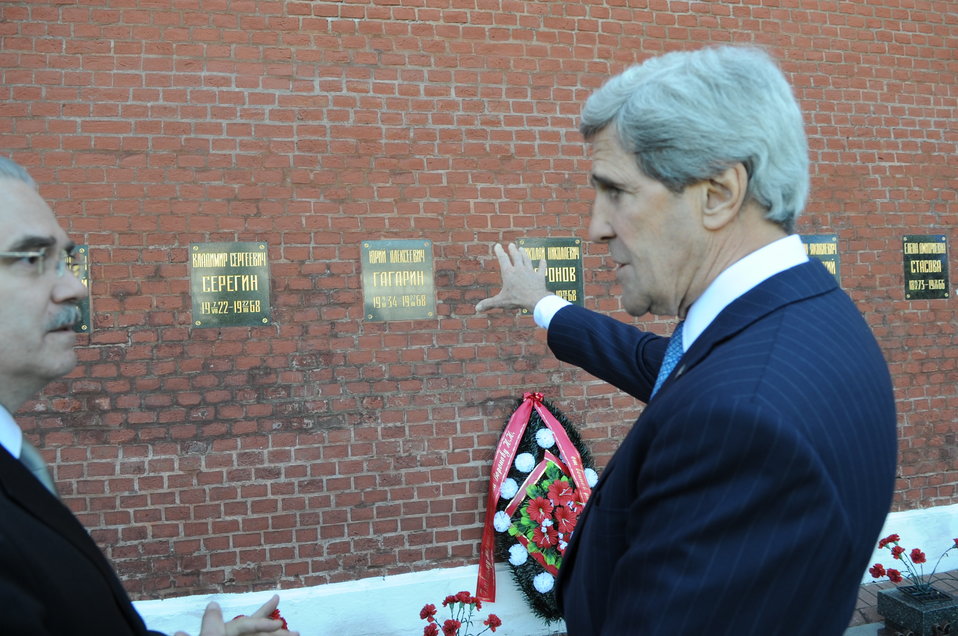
Secretary Kerry Tours Red Square

Russian Chief of Protocol Yuriy Filatov explains to U.S. Secretary of State John Kerry the plaque containing the remains of cosmonaut Yuri Gagarin entombed on the Kremlin wall in Moscow, Russia, on May 7, 2013.